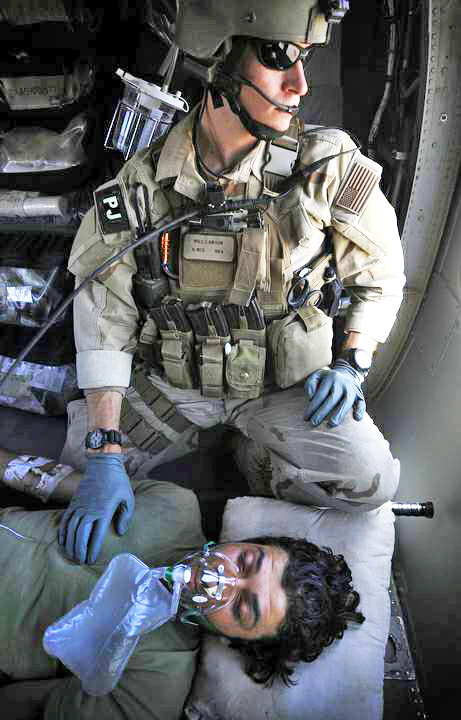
Deliver with care

Staff Sgt. William Lawson, a pararescuemen with the 129th Expeditionary Rescue Squadron, keeps an eye on the countryside as he cares for a wounded Afghan National Army soldier from the Hemland Province, Afghanistan. Sergeant Lawson will provide care to the injured soldier until he is safely delivered to a hospital.